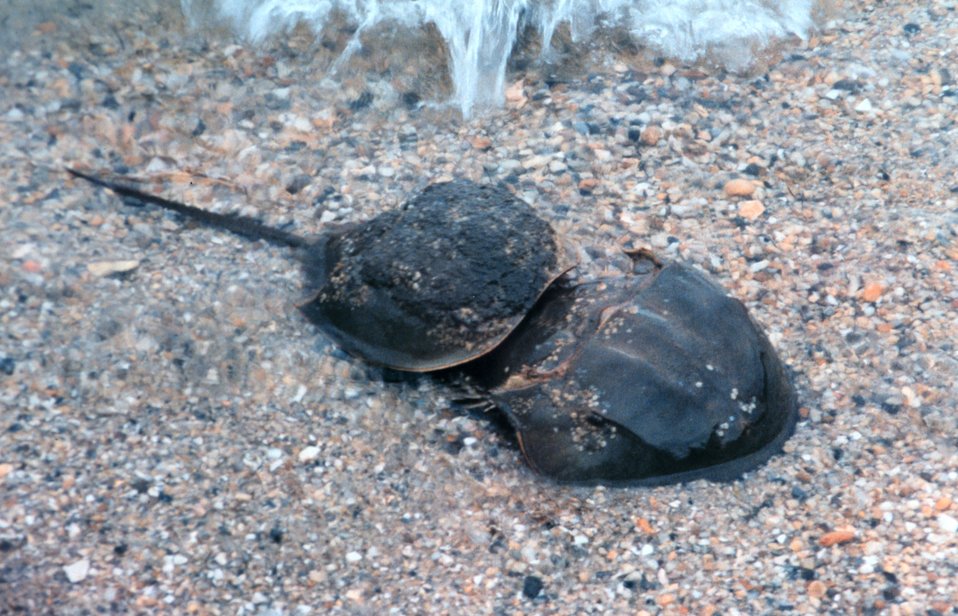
A Class B pair of horseshoe crabs spawning in the shallows at Flag Ponds Nature Park, a unit of Montgomery County, Maryland, public schools.